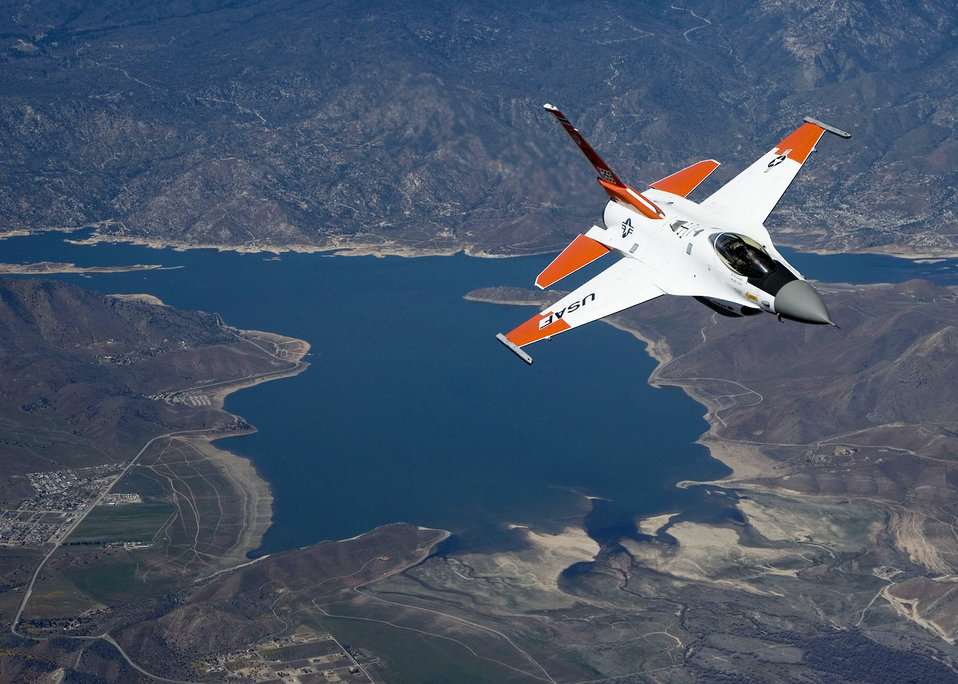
Testing, testing

An F-16 Fighting Falcon fitted with radio frequency identification tags flies behind a test tanker on an aerial flight test April 7, 2010, over Edwards Air Force Base, Calif. The mission tested the Automatic Receiver Aircraft Identification system on the tanker.